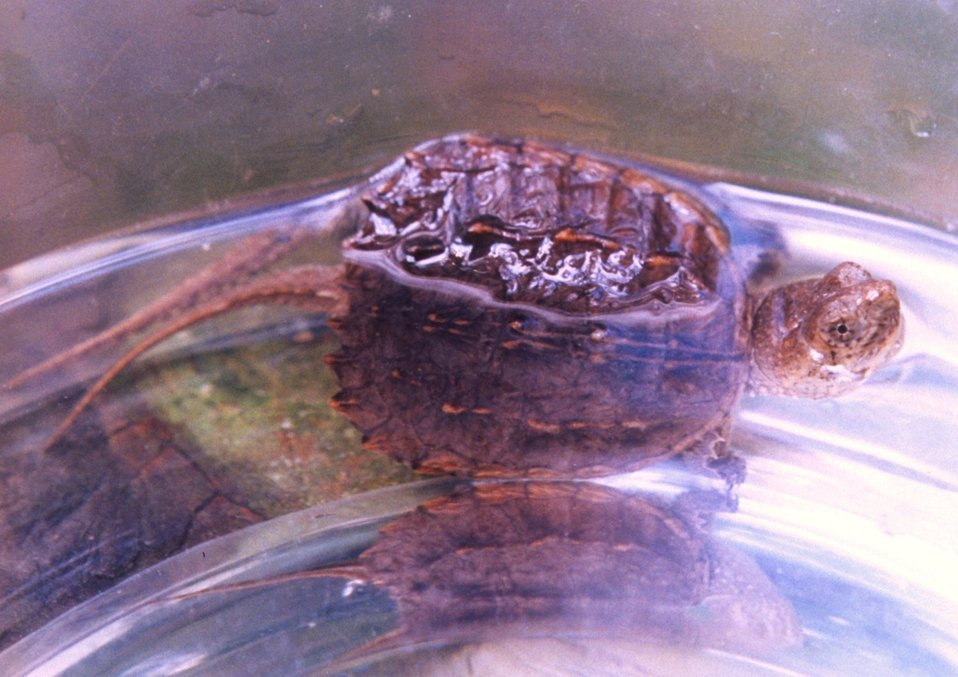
A baby snapping turtle (Chelydra serpentina.)